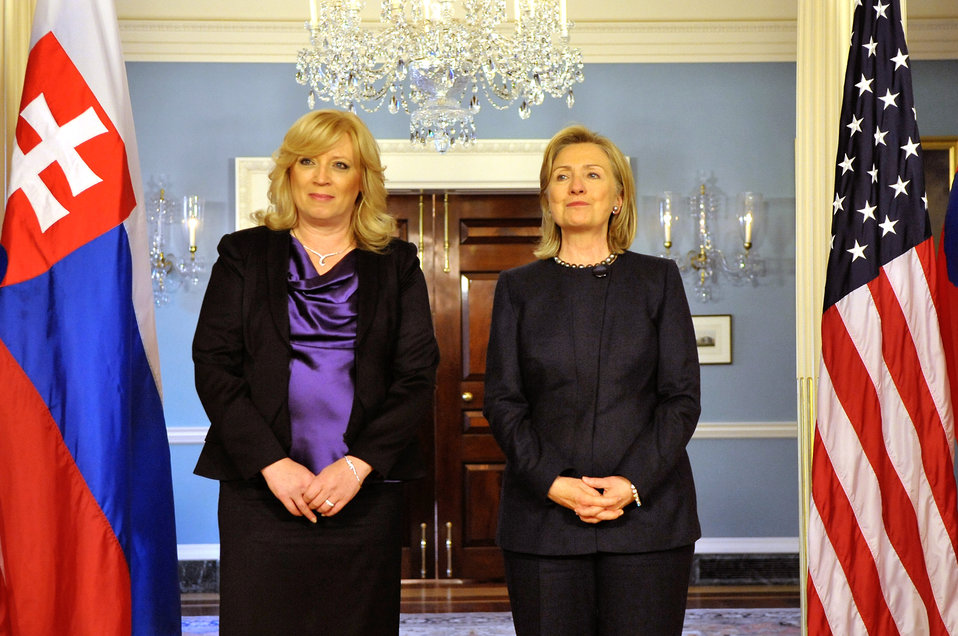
Secretary Clinton Holds a Bilateral Meeting With Slovak Prime Minister Radicova

U.S. Secretary of State Hillary Rodham Clinton holds a bilateral meeting with Slovak Prime Minister Iveta Radicova at the U.S. Department of State in Washington, D.C., on November 10, 2010.